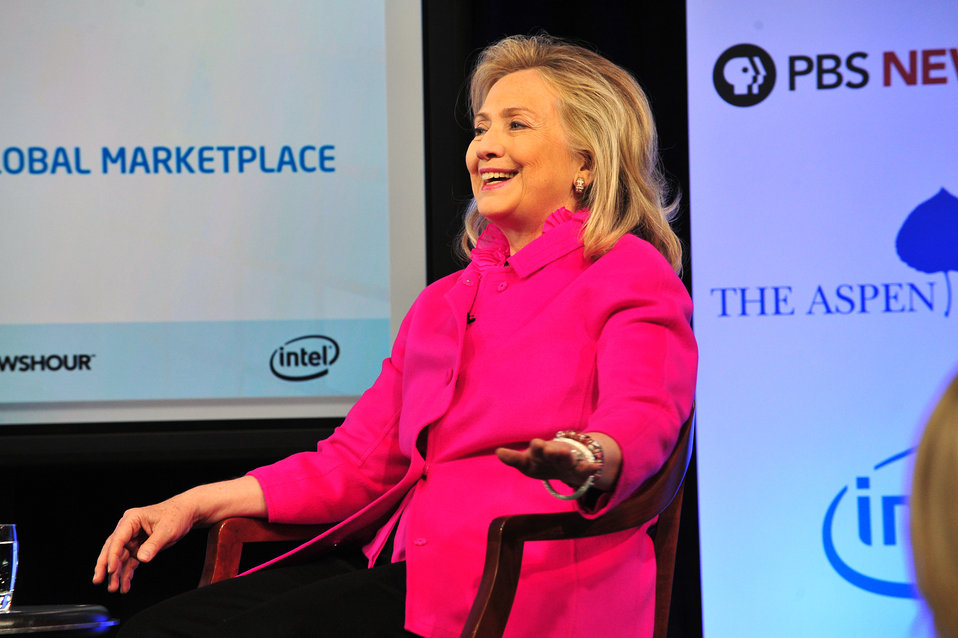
Secretary Clinton Joins Jim Lehrer in a Discussion

U.S. Secretary of State Hillary Rodham Clinton joins Jim Lehrer in a discussion at the Innovation and the Global Marketplace: A Discussion on American Innovation, Trade and the Next 10 Million Jobs event at the Newseum, in Washington, D.C., on December 14, 2011.